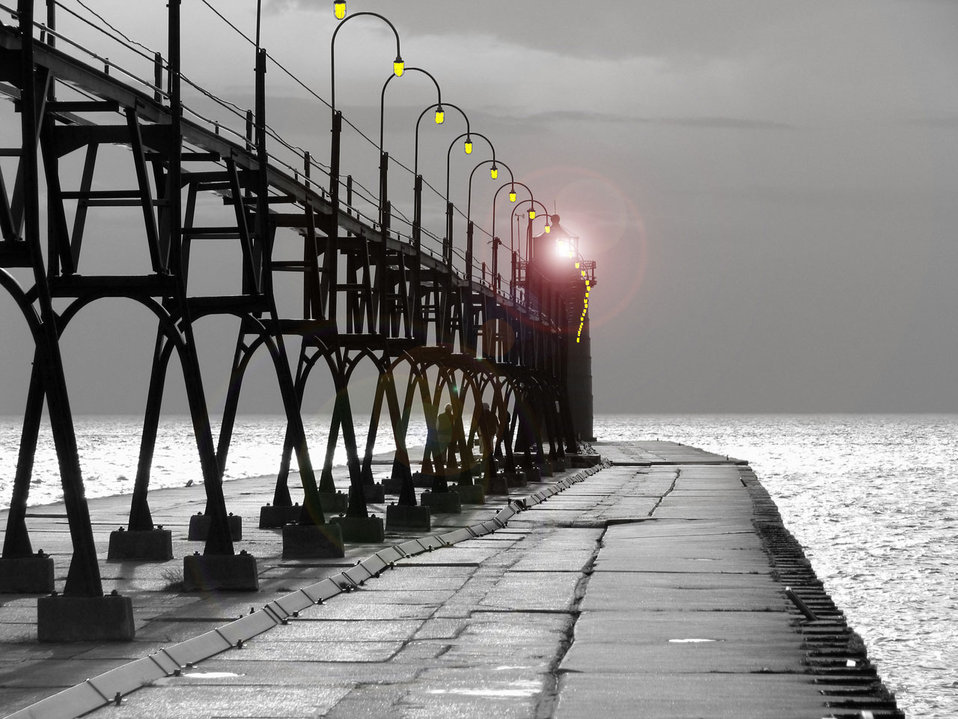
Pier to the lighthouse

B&w with color enhancements of the lighthouse on the south pier in south haven, mi..